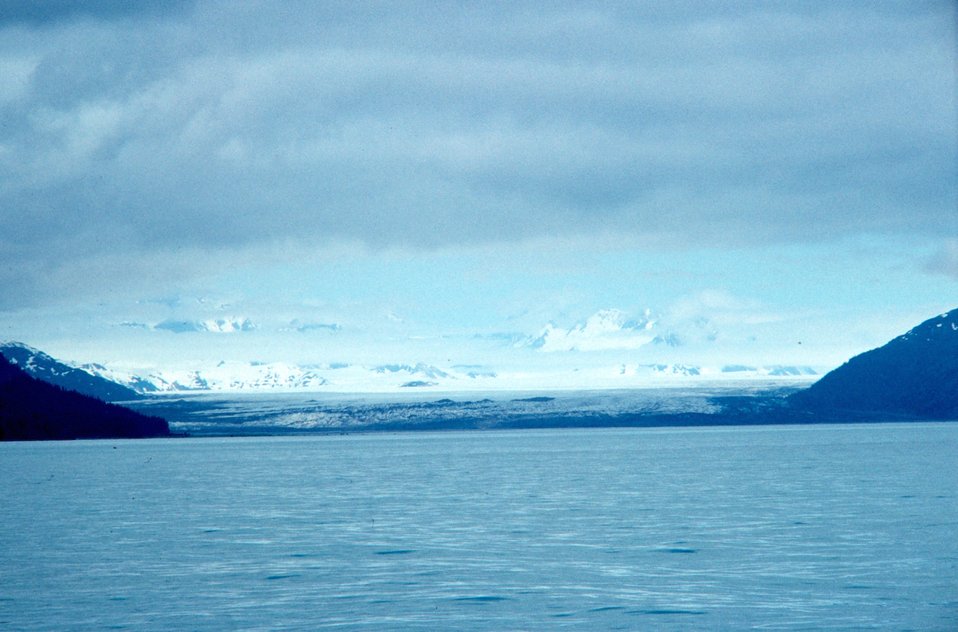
Taylor Glacier - western Prince William Sound